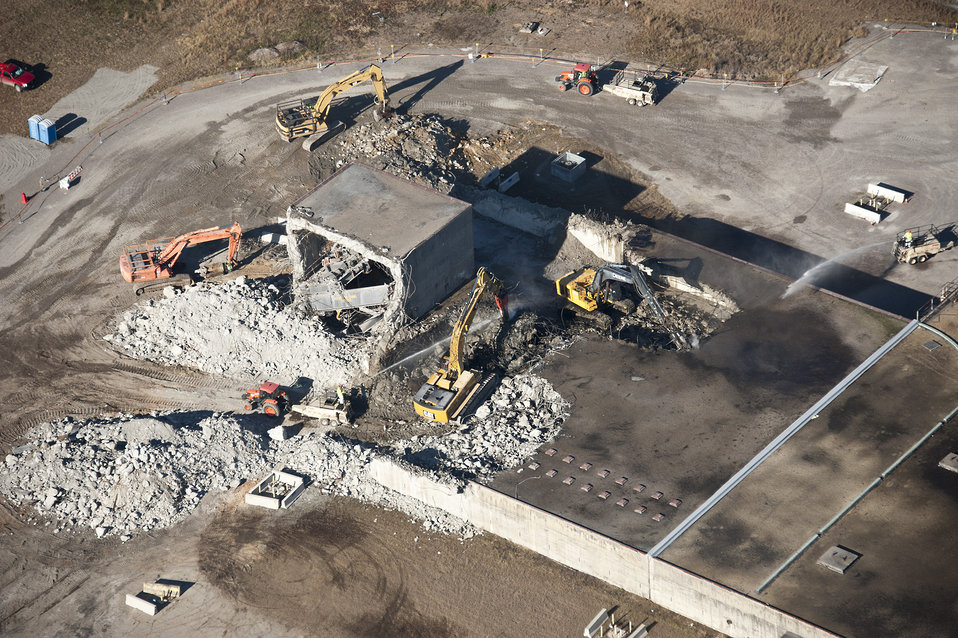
105-R Disassembly Basin structure demolition

Recovery Act workers demolish and remove the 105-R Disassembly Basin structure.